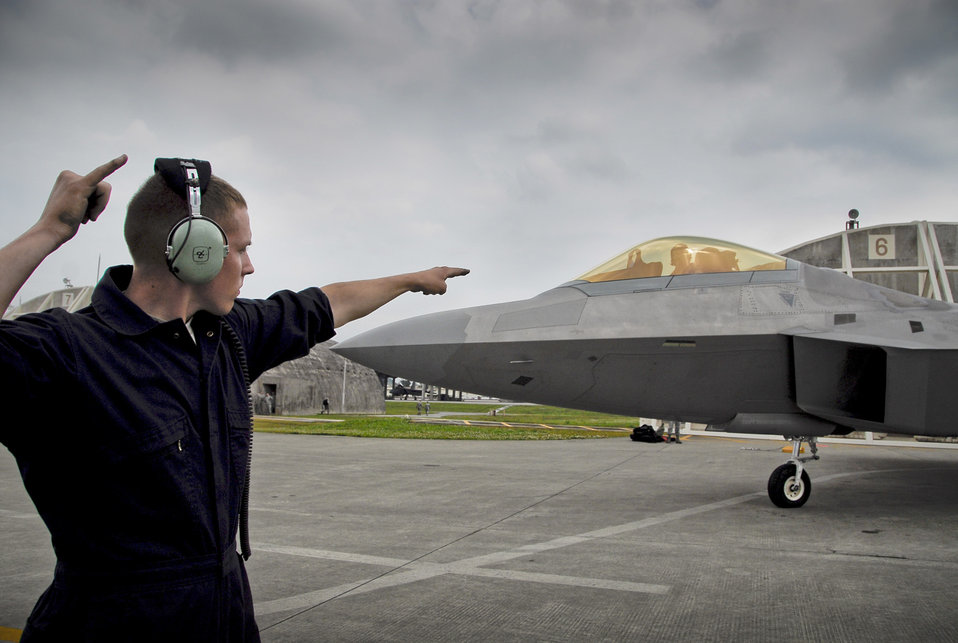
Airmen deploy to Kadena

A crew chief signals the pilot of an F-22 Raptor to prepare to taxi March 31, 2011, on the flightline at Kadena Air Base, Japan. The Airmen, along with the F-22s, are assigned to the 525th Expeditionary Fighter Squadron at Joint Base Elmendorf-Richardson, Alaska. They deployed to Kadena AB earlier in 2011 to test their capabilities in a new environment and to train with Airmen and aircraft there.